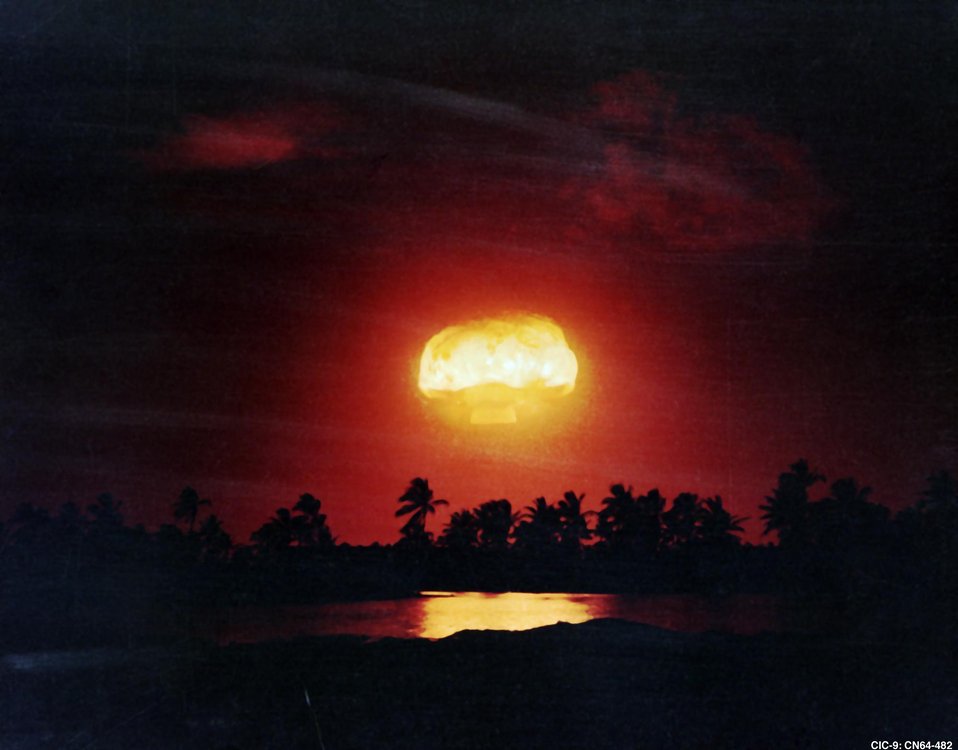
OPERATION DOMINIC - BLUESTONE TEST.